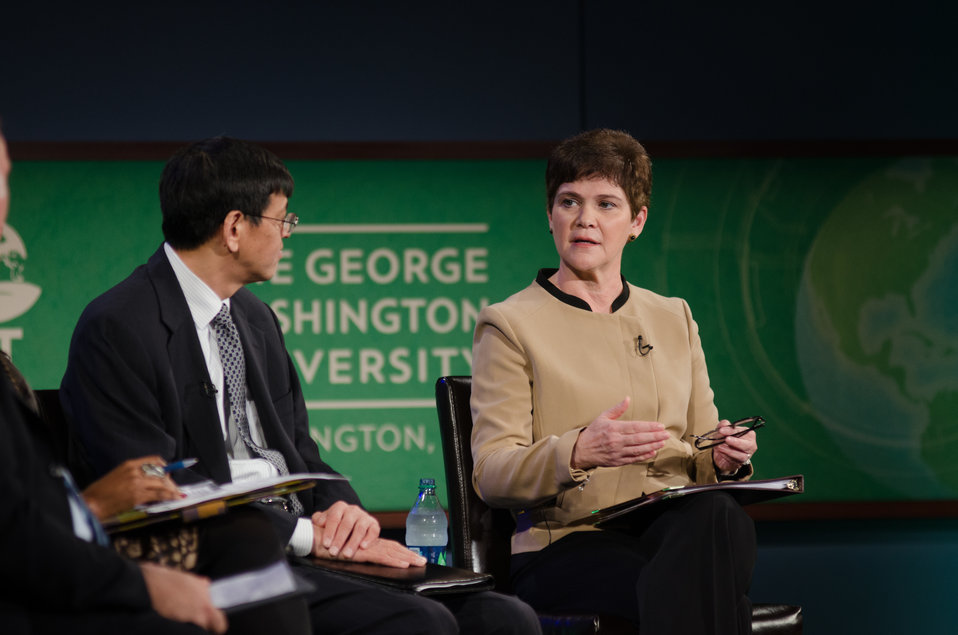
Shenggen Fan, Ph.D. Director General, International Food Policy Research Institute listens to Krysta Harden, Deputy Secretary of Agriculture on the discussion panel “Policy, Palate, and the Plate-Innovation and how policy can impact practice at the Feeding the Planet Summit of leaders from agriculture, business, finance, academia, Non Governmental Organization, government and media, along with a large contingent of college students to engage around promising innovations in global agriculture and food security. The Summit spotlights transformation and scalable developments in policy, practices and technologies with special attention to related issues of gender, climate change and urbanization at The George Washington University in Washington, DC, on Wednesday, Oct. 31, 2013.